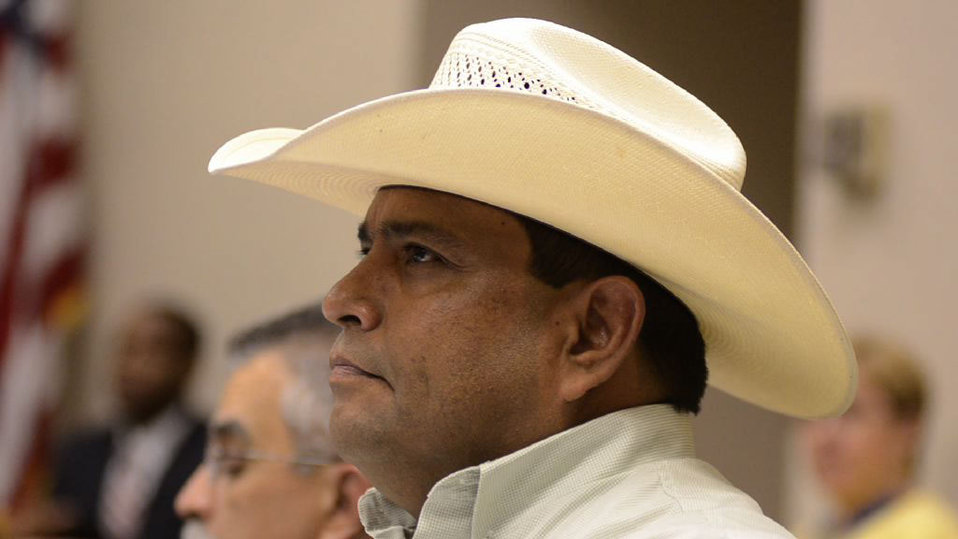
Mark Wadsworth, Natural Resources/Range Management, Shoshone-Bannock Tribes, Blackfoot, Idaho, listens to a speaker at the first administrative/training meeting of the U.S. Department of Agriculture's (USDA) Council for Native American Farming and Ranching (CNAFR) is held on Monday, Aug. 13, 2012 at the USDA headquarters Whitten Building, in Washington, D.C. CNAFR was created to advise the Secretary on ways to eliminate barriers to participation for Native American Farmers and Ranchers in USDA programs. The Council was established as part of the Keepseagle settlement, and is conducted under the oversight of USDA's Office of Tribal Relations, which is part of the Office of the Secretary of Agriculture. The Director of Tribal Relations Joanna Mounce Stancil serves as Designated Federal Official (DFO) for the Council.